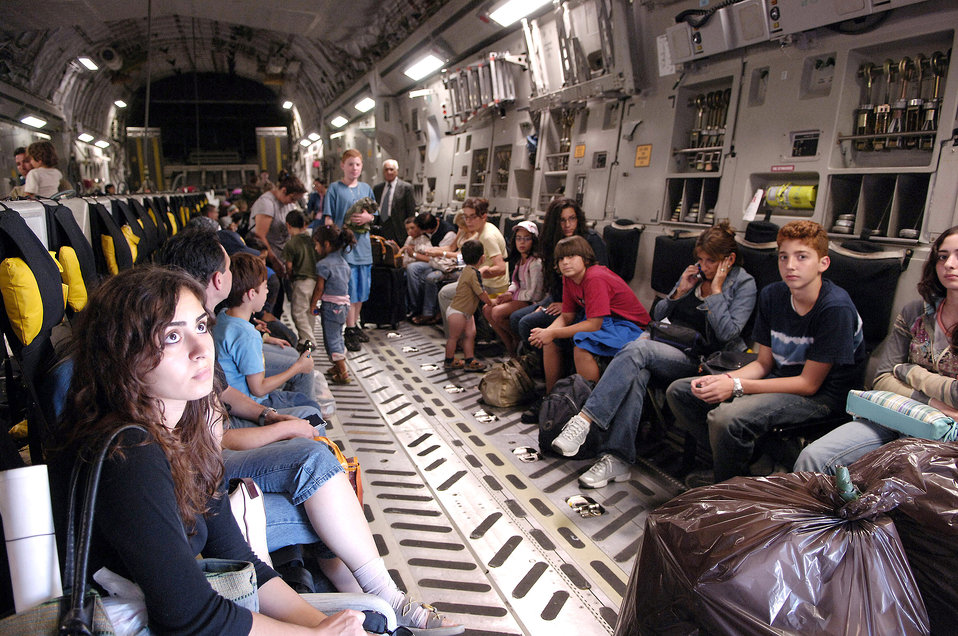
Federal marshals thank Ravens for Lebanon evacuation role

Ninety-five American citizens from Lebanon wait to disembark a C-17 Globemaster III July 24 at McGuire Air Force Base, N.J. Phoenix Ravens along with the Federal Air Marshals ensured the safety of the evacuees and the crew during these missions. The Federal Air Marshal Service awarded the Air Mobility Command 26 Ravens who provided transportation security for the Lebanon evacuees.